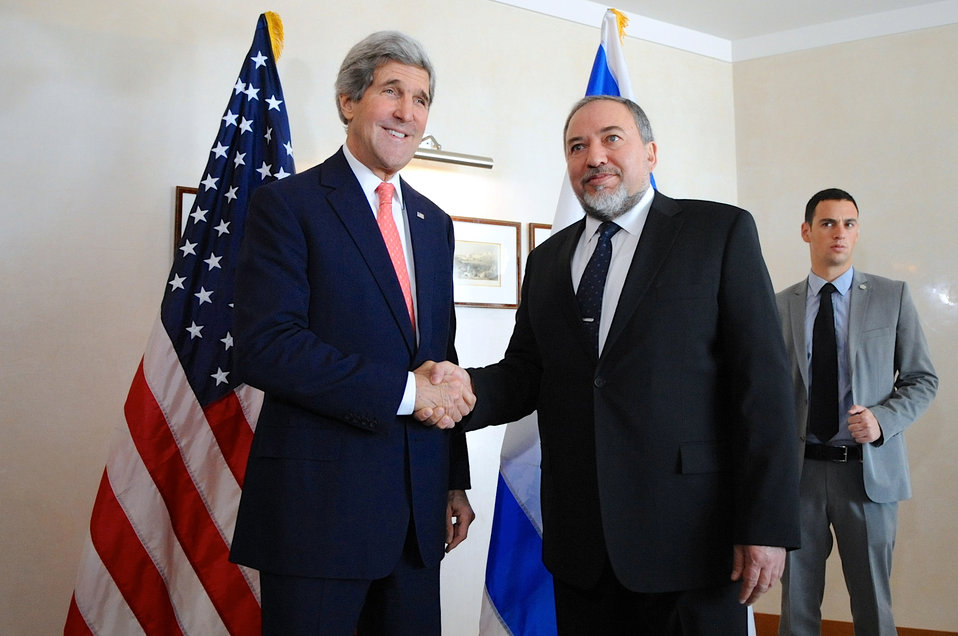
Secretary Kerry Meets With Israeli Foreign Minister Lieberman

U.S. Secretary of State John Kerry and Israeli Foreign Minister Avigdor Lieberman shake hands before a meeting in Jerusalem on January 3, 2014.